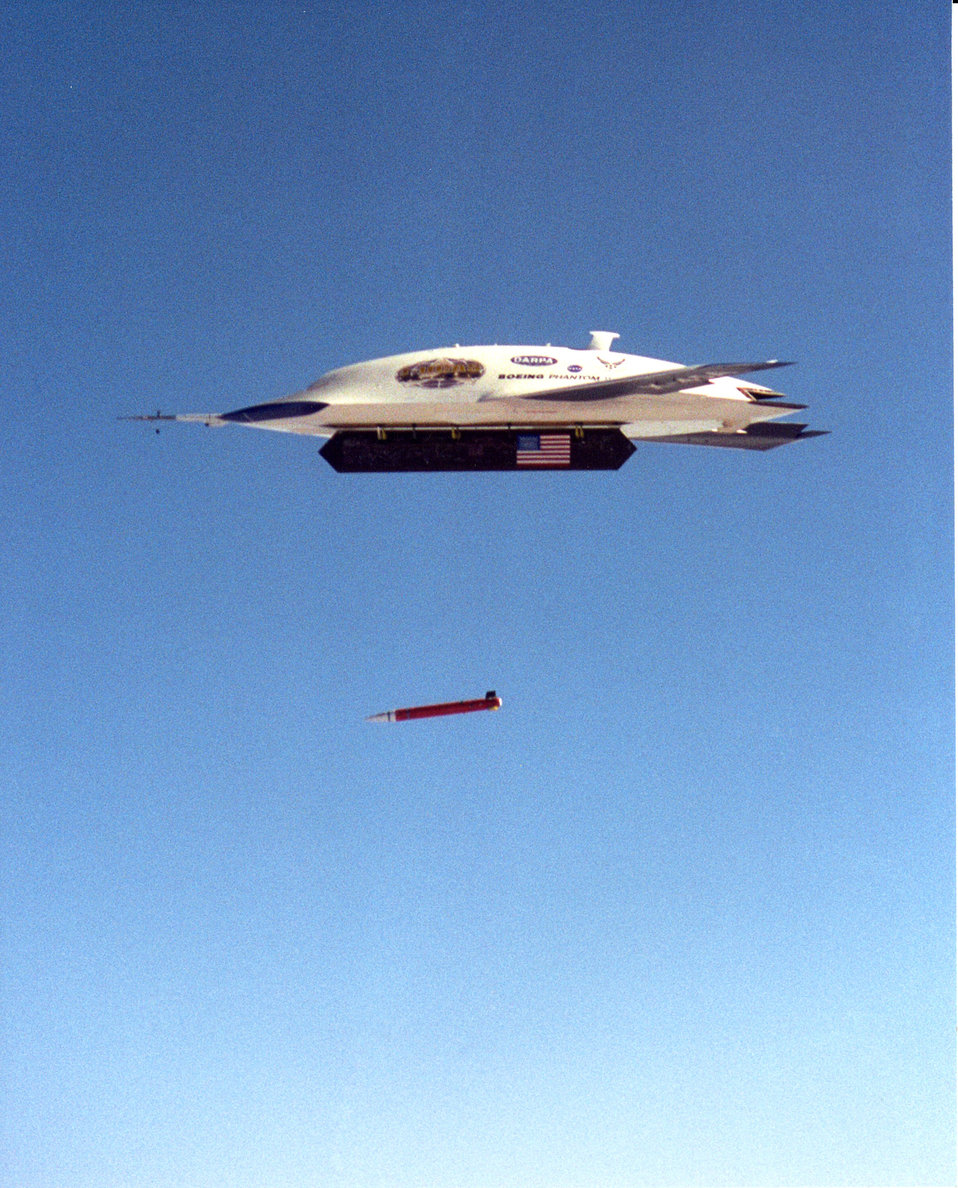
X-45A

The X-45A Unmanned Combat Aerial
Vehicle technology demonstrator releases an inert precision-guided weapon.